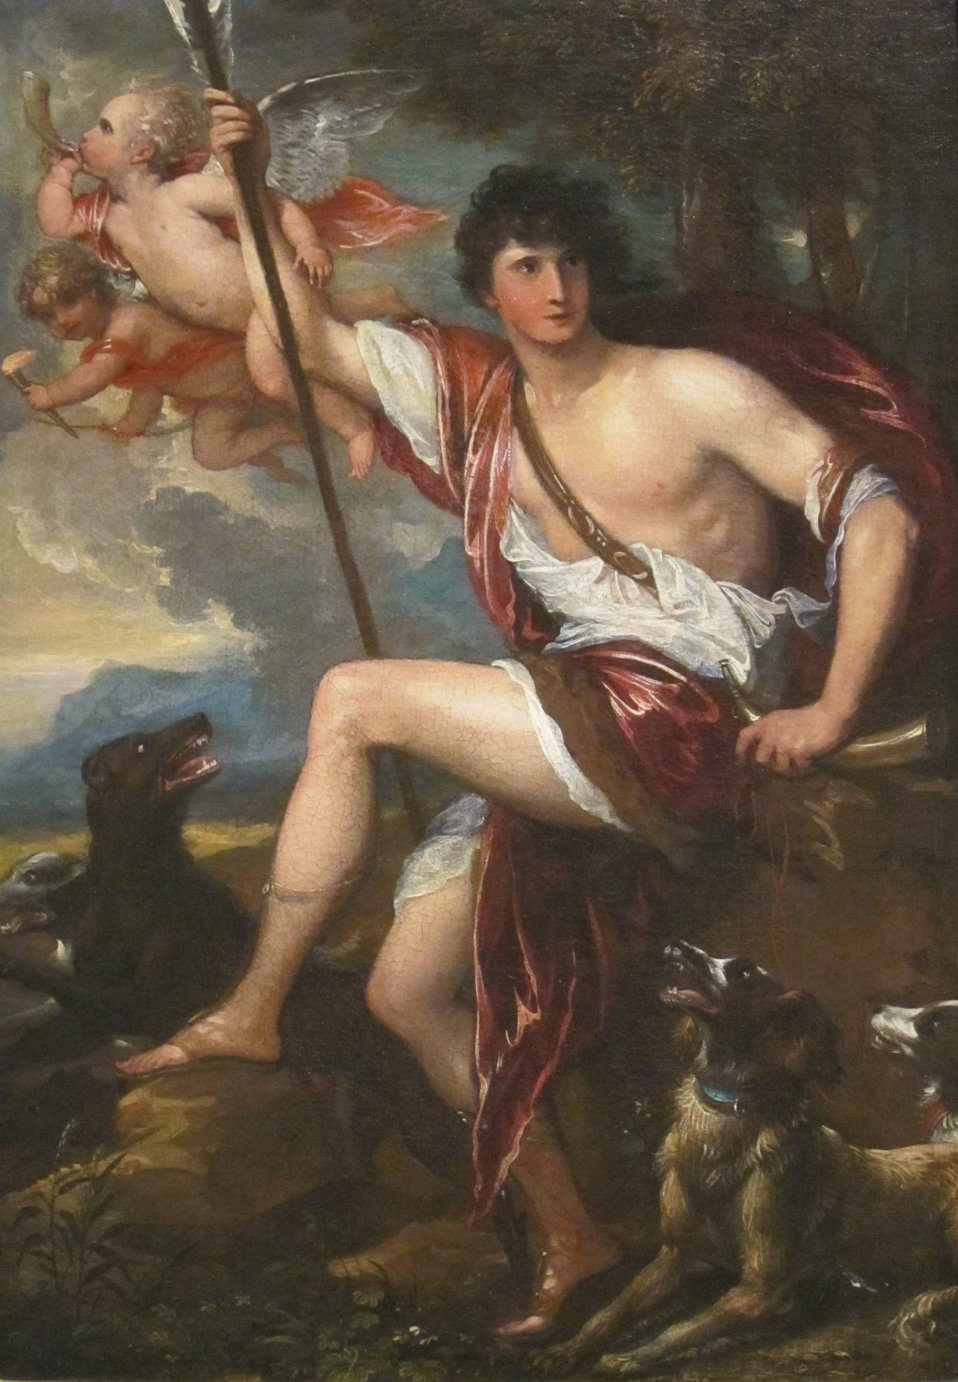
'Adonis' by Benjamin West, Dayton Art Institute